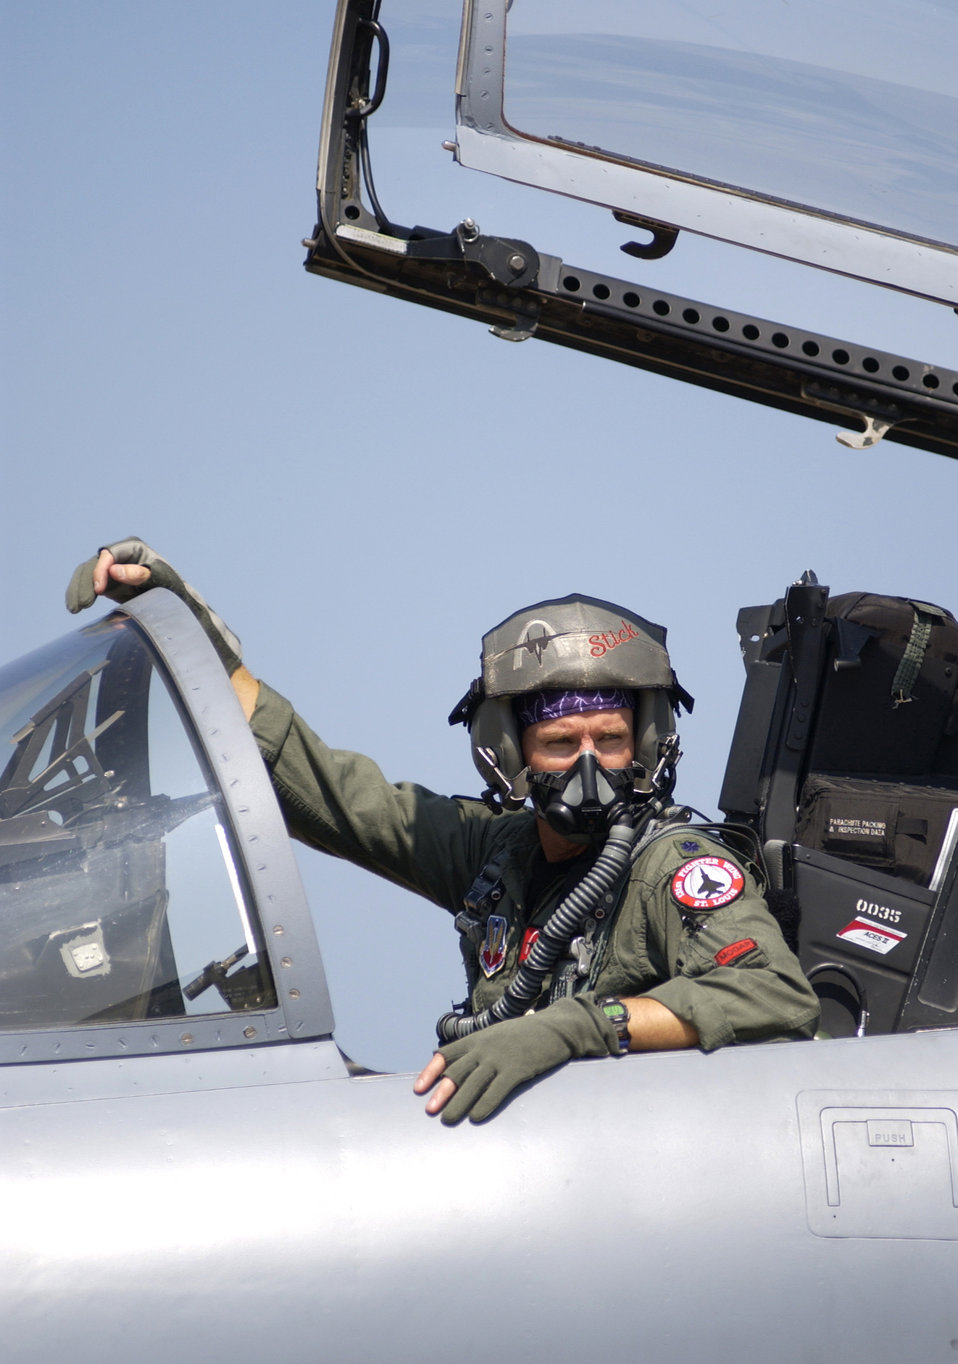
Moving out

LANGLEY AIR FORCE BASE, Va. -- One of four F-15C Eagles departed permanently from here Sept. 1 and will reassigned to the 131st Fighter Wing Air National Guard Base at Lambert Field in St. Louis, Mo. The former 27th Fighter Squadron aircraft will soon be replaced by the new F/A-22 Raptor.